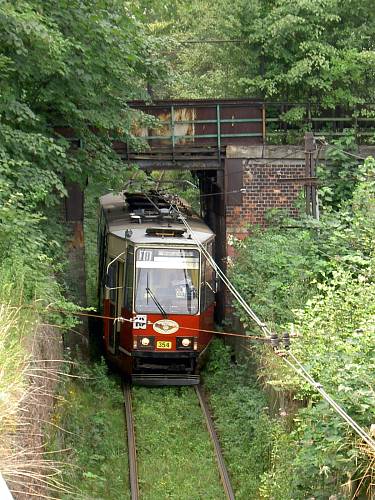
105Na car of line 18 squeezing through a narrow 'tunnel'. Line 18 is an interurban line on the Westside of the network.